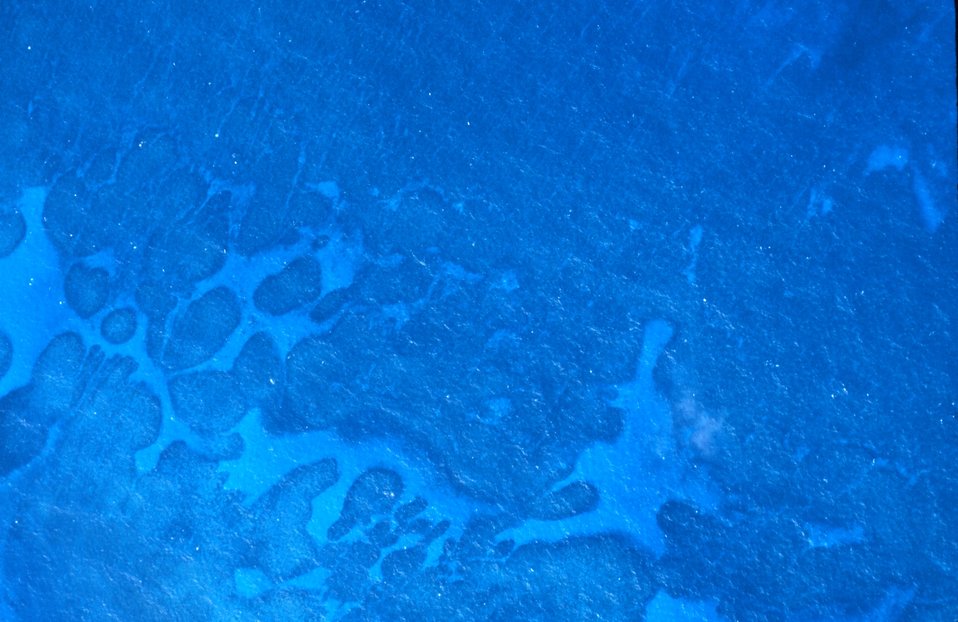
Aerial view of patterns in a coral reef.